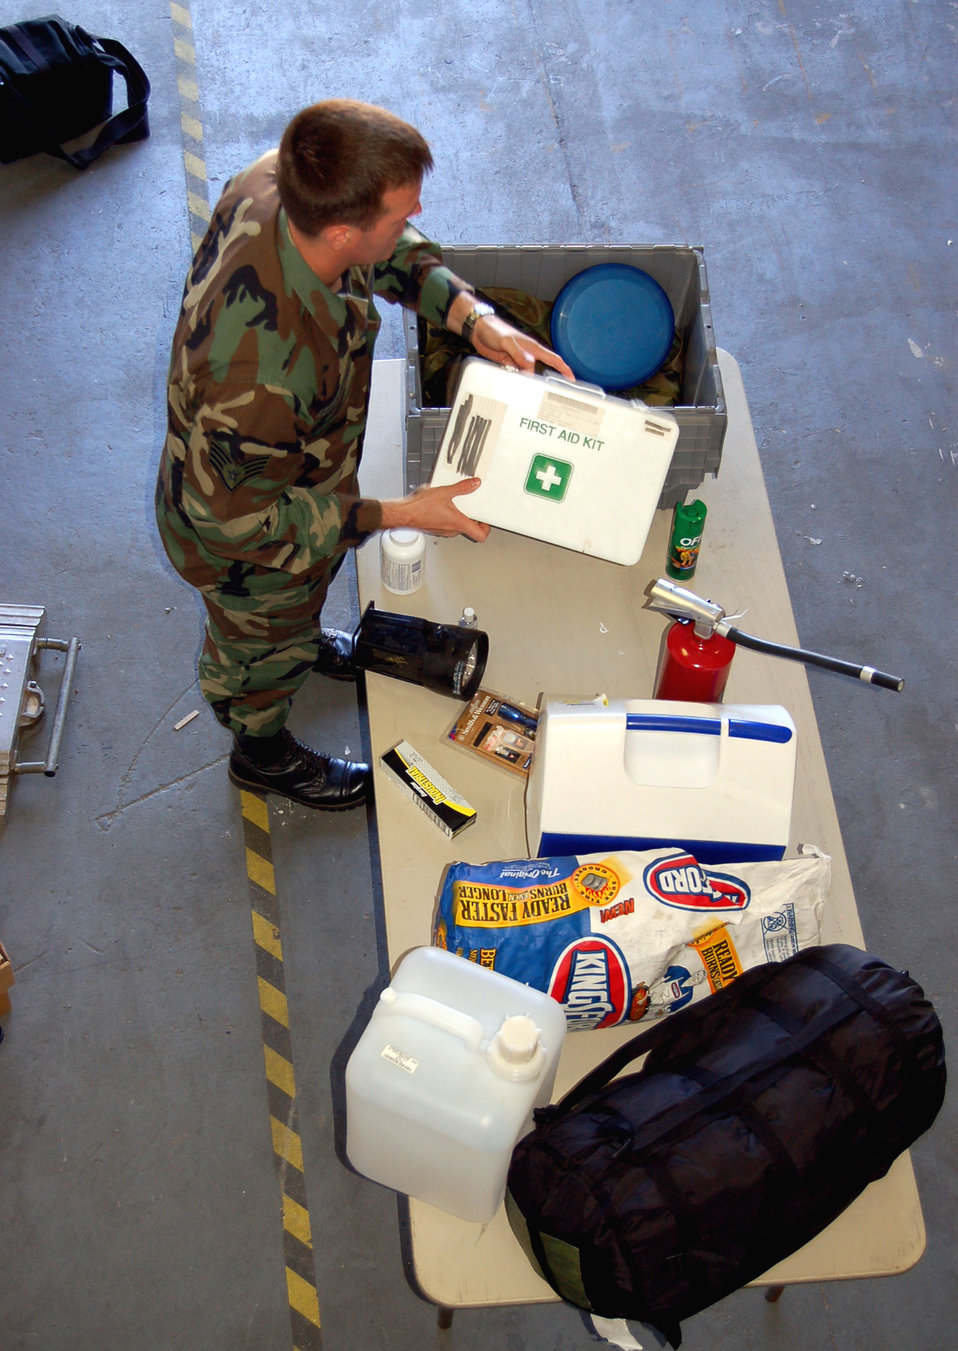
Hurricane response

Staff Sgt. Darren Pemberton packs a